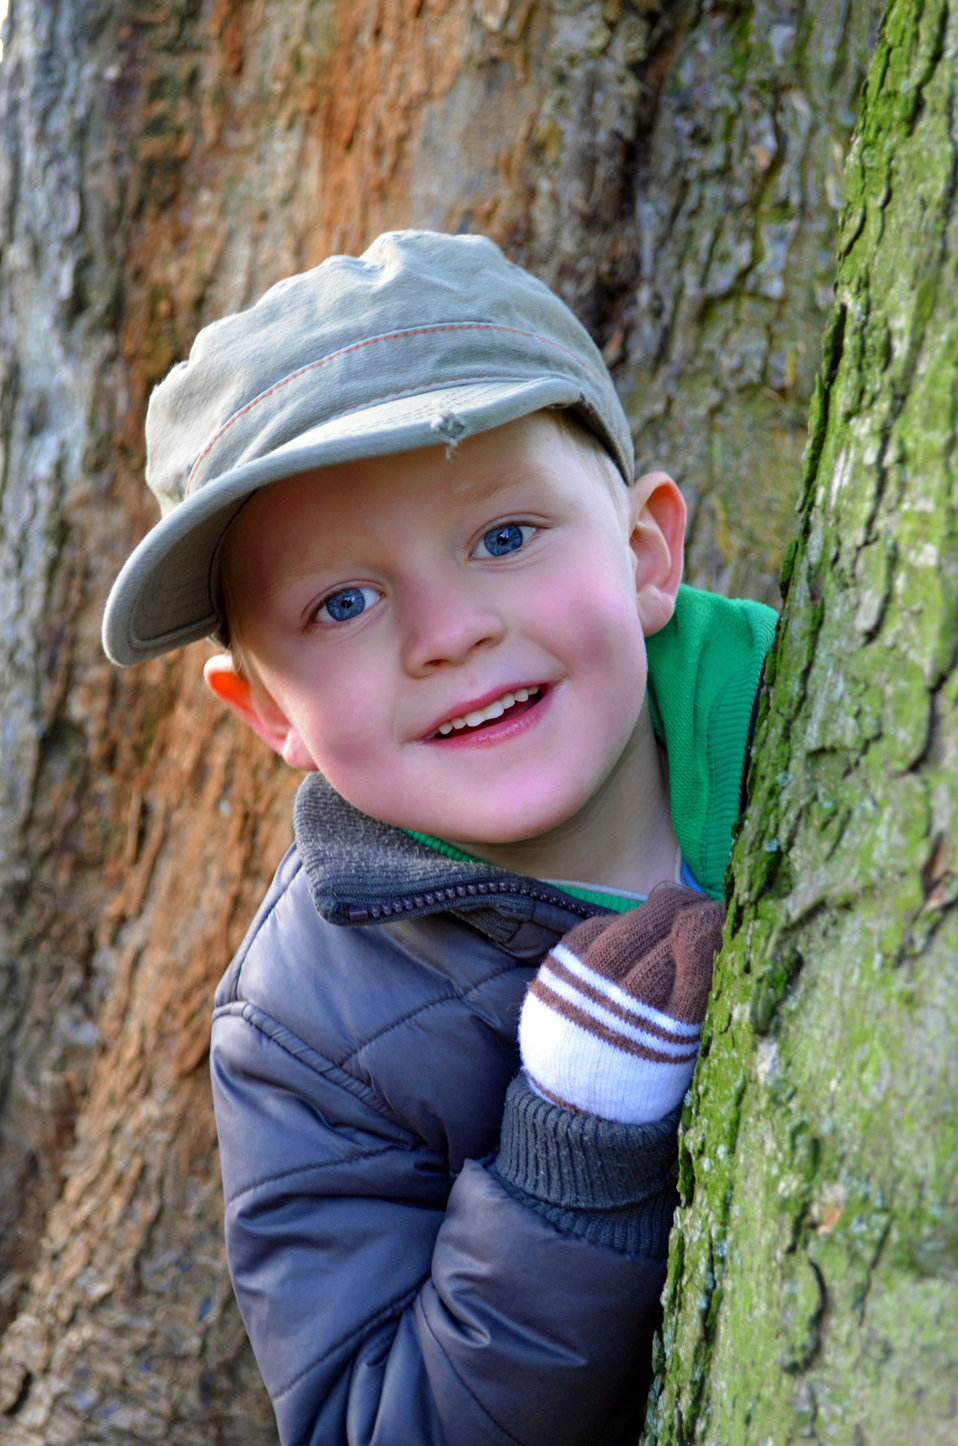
Child and autumn fashion.